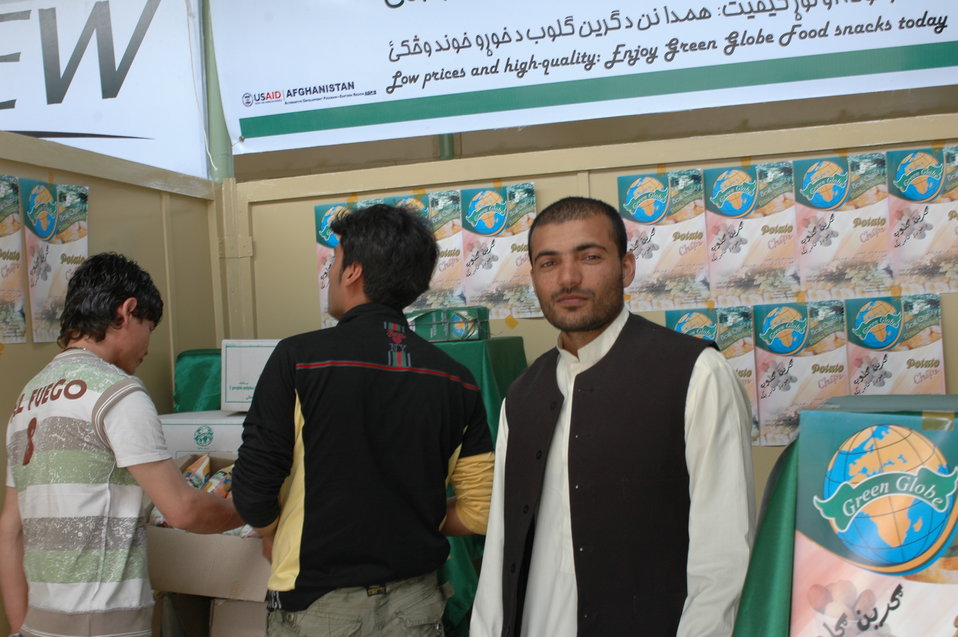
AgFair potato chips

On May 20, 2009, Ambassador Eikenberry joined government officials, farmers, agribusiness representatives, and international investors at the launch of the Kabul International AgFair on May 20. Held at the Ministry of Agriculture, Irrigation and Livestock’s Badam Bagh Demonstration Farm in Kabul, the fair showcases Afghanistan’s wealth of fresh produce, provides lucrative business opportunities, and demonstrates innovative agricultural technologies. It is expected to attract more than 50,000 participants from May 21-22.

U.S. Ambassador Karl Eikenberry and Afghan Acting Minister of Agriculture, Irrigation and Livestock (MAIL) Saleem Kunduzi gave opening remarks at the AgFair’s launch. “The United States Government is co-sponsoring national and regional AgFairs like this one to encourage trade and generate business opportunities in the agriculture sector,” Ambassador Eikenberry said. “In a country that is 80 percent rural, promoting licit crops and agriculture sector job creation are two essential steps to successful development in the region.”

Member of Parliament Abdul Salam Qazizada offered bold remarks, stating that we need to engage more with farmers in every province throughout the country.

Following the ceremony, Ambassador Eikenberry visited a number of vendors at the fair with Acting Minister Kunduzi and Mr. Qazizada. In speaking with farmers displaying their produce, Ambassador Eikenberry found that many have increased yields due to USAID assistance, have found regional buyers for their produce, and were grateful for the opportunities that AgFair provides.

Ambassador Eikenberry also discussed the state of agriculture with Minister Kunduzi and Mr. Qazizada. They agreed that while some progress has been made, there is a great deal more work to be done. Ambassador Eikenberry reiterated from his speech that USDA Secretary Vilsack recently met with Minister Rahimi to discuss the U.S. commitment to agriculture development. In a message to the Afghan public, Secretary Vilsack stressed that the USG aims to play a leading role by bringing more agriculture experts to the provinces and supporting agriculture research such as the Badam Bagh Demonstration Farm. Additionally, he looks “forward to working together to increase agricultural productivity, which will result in more jobs throughout the entire value chain, and a better quality of life for the citizens of Afghanistan.”

The United States Government is proud to support Afghan agriculture. Since 2002, America has provided more than 1 billion dollars in assistance to agriculture and rural development. AgFairs like the one Ambassador Eikenberry visited creates awareness of Afghanistan’s expanding agricultural sector, promotes new agricultural technologies that increase productivity, and provides a forum to connect farmers to local and international buyers. These results will contribute to Afghanistan’s prosperity.

We are already seeing the results of these fairs. Since 2007, Afghanistan’s agricultural fairs have attracted more than 500,000 participants from across the nation and the world, generated millions of dollars in sales of the country’s high-value produce, and provided participants with a competitive edge in one of the fastest growing markets in Central Asia.

As Ambassador Eikenberry stated, “The word is out – with over 180 international businesses represented at this fair, it is obvious that Afghanistan has sparked the interest, and appetite, of the world.”